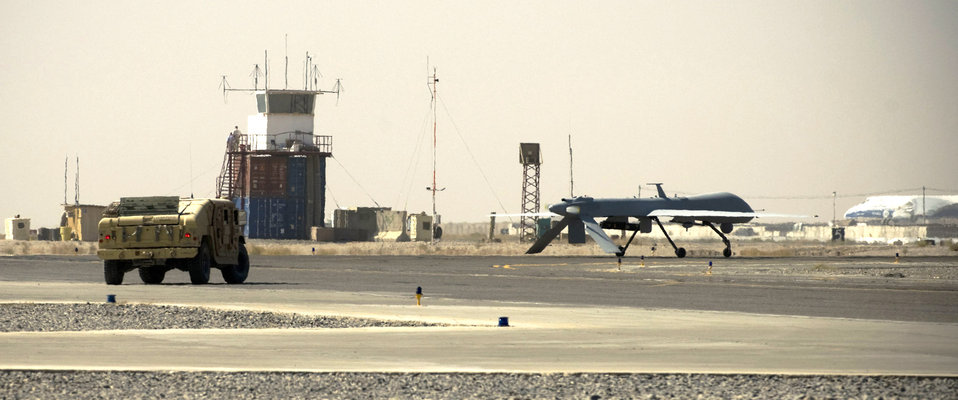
Predators on patrol in Afghanistan

A security forces Humvee escorts an MQ-1 Predator onto the runway Oct. 26 at a base in southern Afghanistan. Due to the small size of the aircraft and how unfamiliar many pilots are with it at the NATO-controlled airfield, security forces must escort the Predator to prevent potential mishaps.